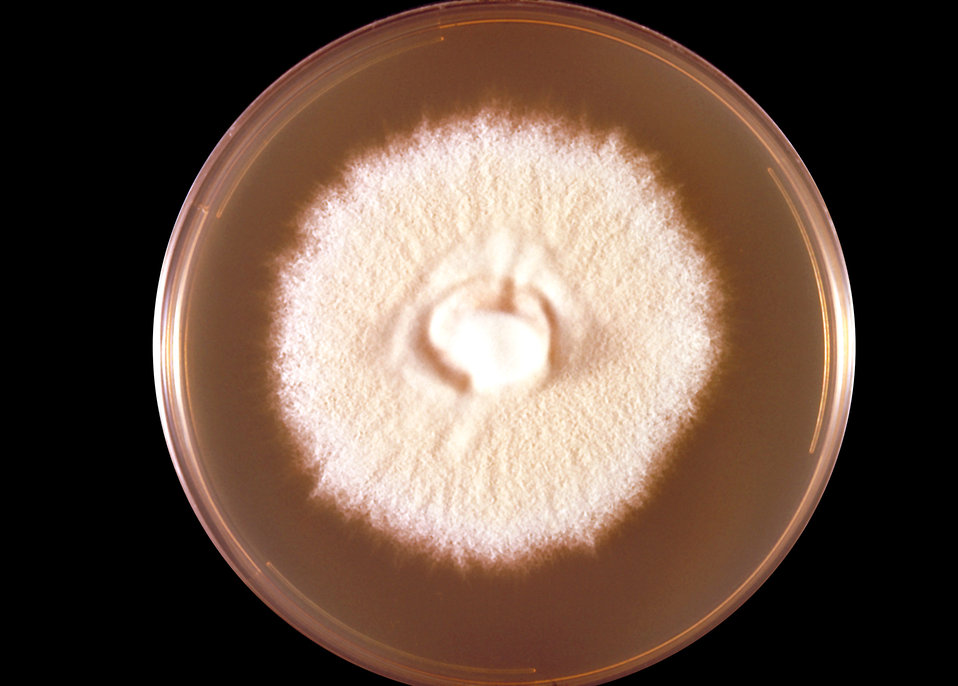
This is a top view of a Sebouraud's dextrose agar plate culture growing a colony of Microsporum persicolor fungus.